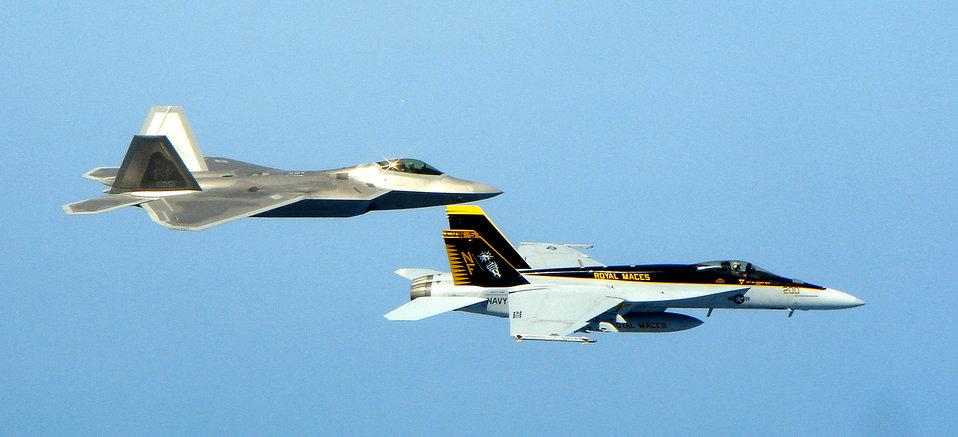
Deployed F-22s leave Pacific, return to Langley

An F-22A Raptor deployed to Kadena Air Base, Japan, trains with a U.S. Navy F/A-18 Super Hornet April 26, near Okinawa, Japan. The Raptors, from the 27th Fighter Squadron, at Langley Air Force Base, Va., deployed to Kadena in February. The Super Hornets, the Navy's newest frontline carrier-based fighter, are stationed at Naval Air Facility Atsugi, Japan. The training exercises focused on the next generation fighter capabilities between the two aircraft.